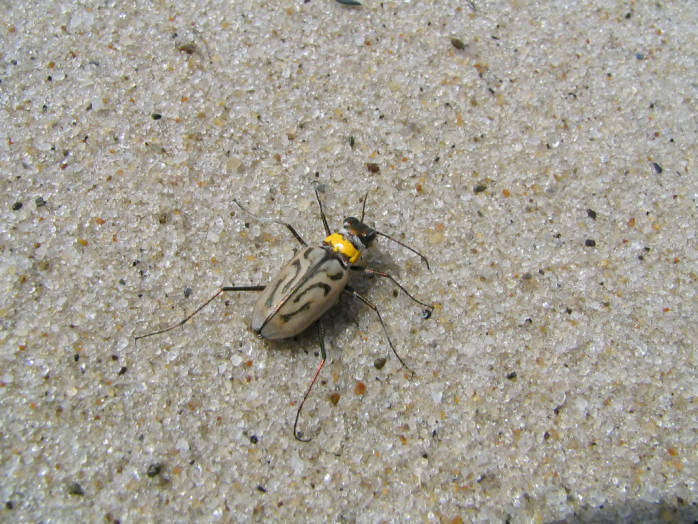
Northeastern Beach Tiger Beetle

Marked with yellow paint.